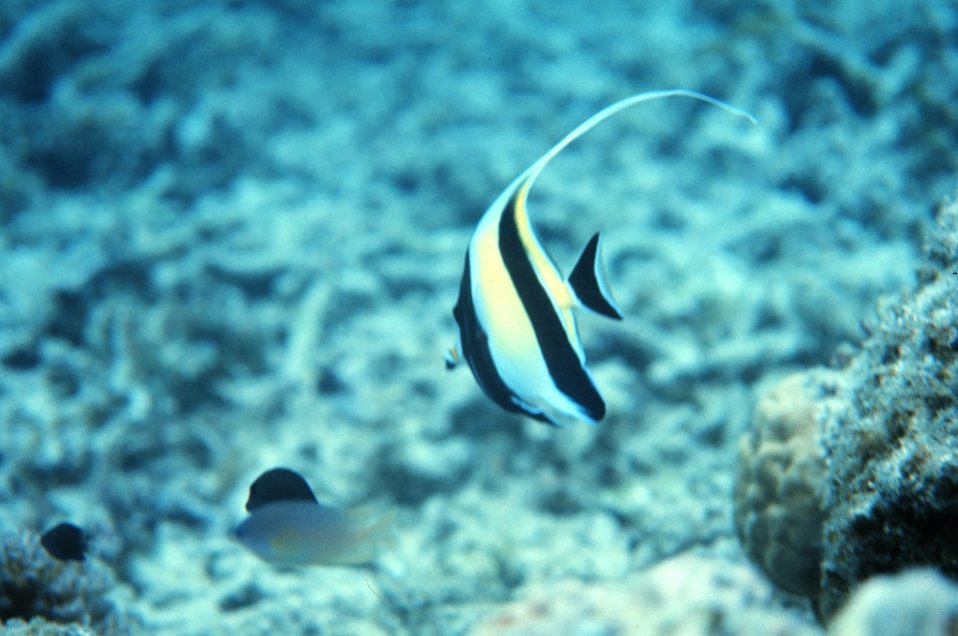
Zanclus canescens - Moorish Idol